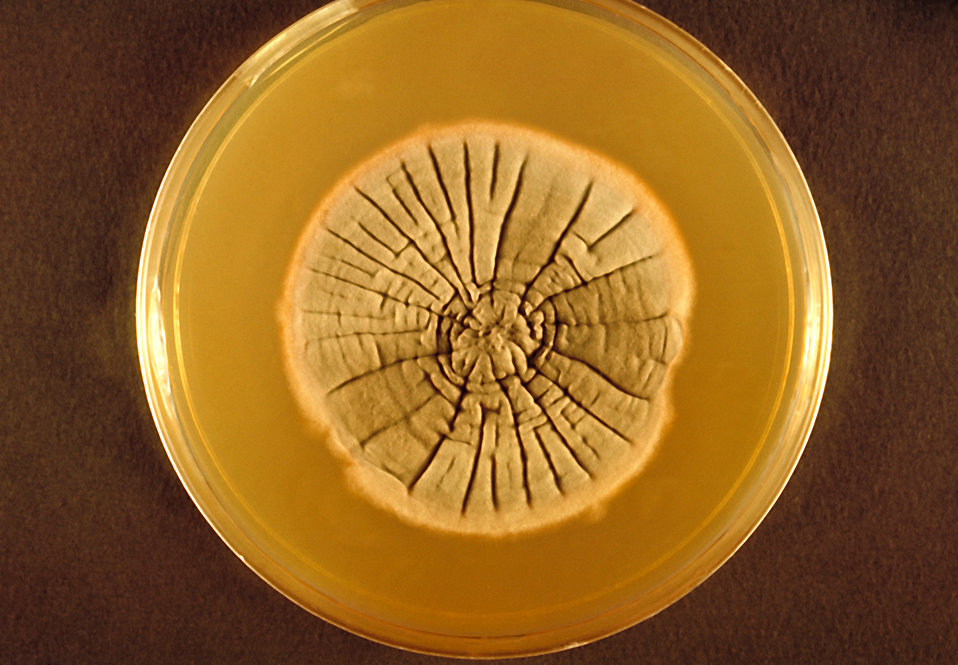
This image shows a plate culture growing the fungus Neotestudina rosati.